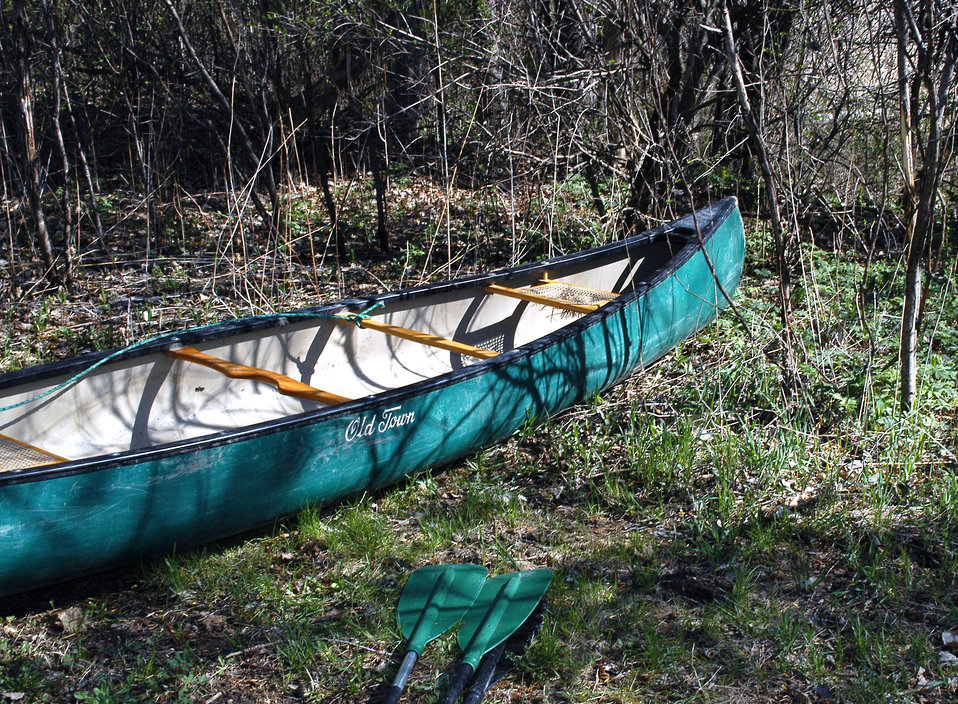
Canoe Safety

The first station at Youth Fishing Day featured boat safety and don't rock the boat.